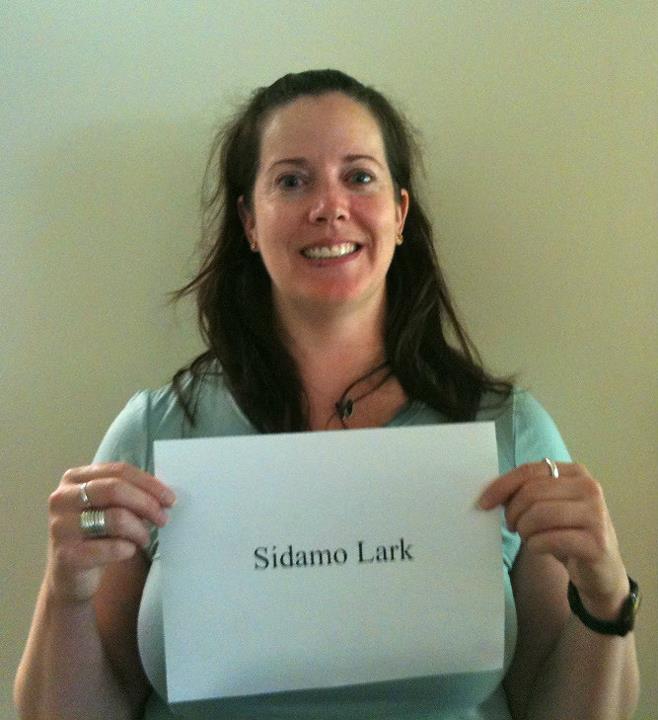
Anne St. John, 'Sidamo Lark,'

International Affairs participates in FFI's In Our Hands campaign